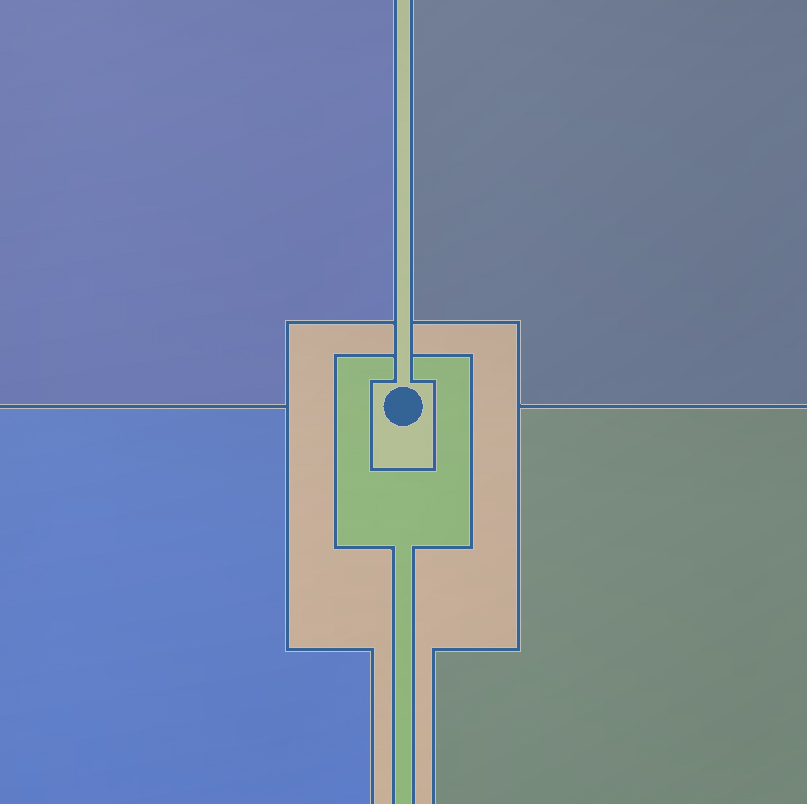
Ion Trap

Diagram of a NIST ion trap that incorporates an optical fiber to collect light emitted by the ions (electrically charged atoms). Individual electrodes used to trap an ion 30 to 50 micrometers above the surface are shown in different colors surrounding a 50-micrometer-wide hole where light is collected and deposited in a fiber attached below.